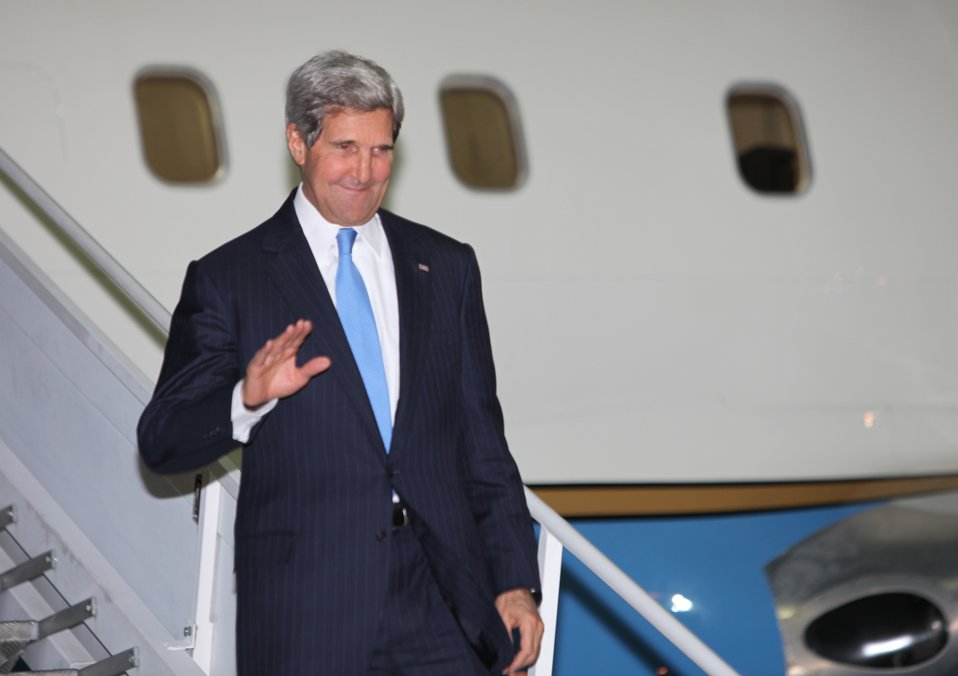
Secretary Kerry Arrives in Vilnius, Lithuania

U.S. Secretary of State John Kerry arrives at the airport in Vilnius, Lithuania on September 6, 2013.